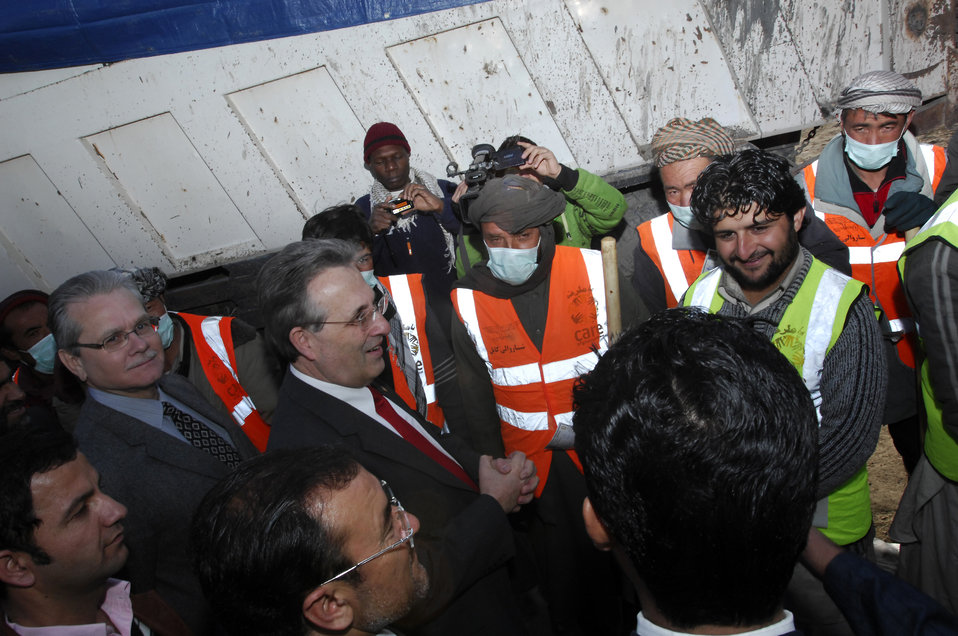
Care97